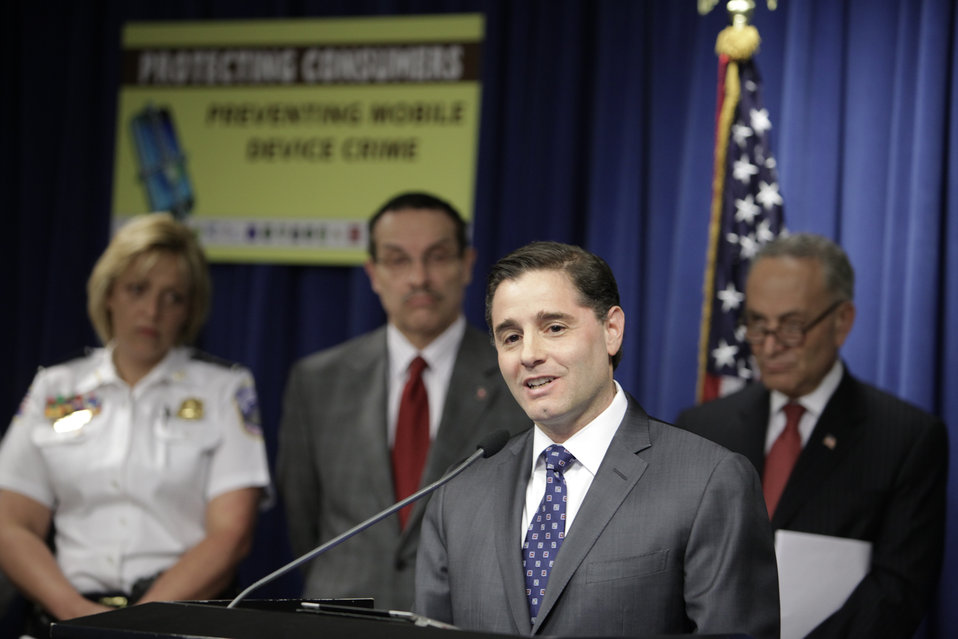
FCC Chairman Genachowski speaks about consumer protection against theft of data and smartphones at the John A. Wilson Building in Washington, DC on April 10, 2012.